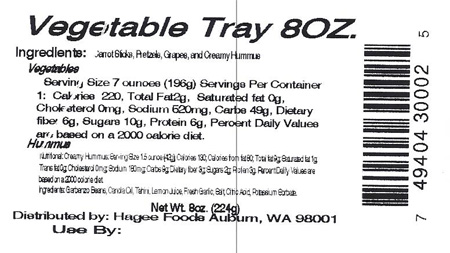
RECALLED – Hummus

July 16, 2013 – Product Recall – Hagee Foods Inc. dba Penny's Salsa Inc. Recalls Hummus Products Because of Possible Health Risk.